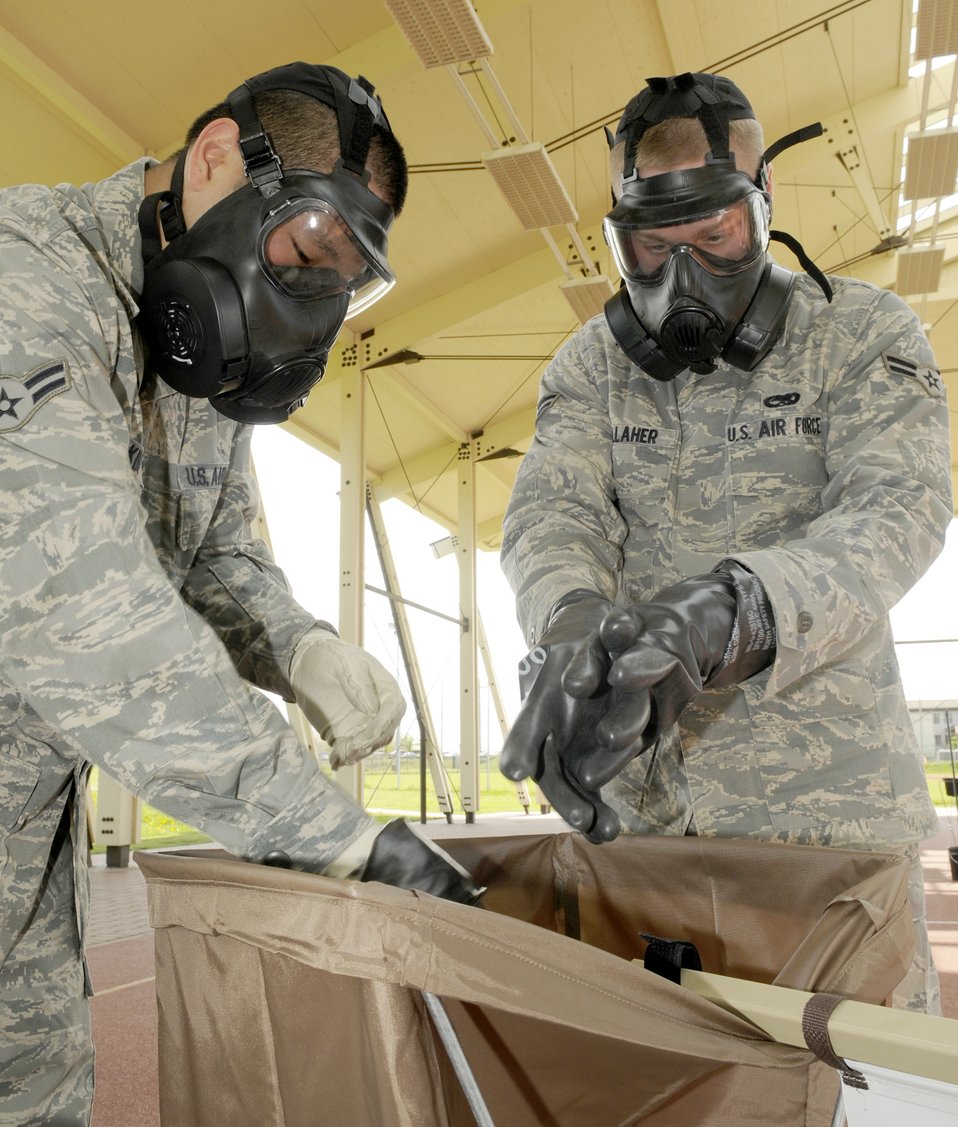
Airmen practice contamination control

Airman 1st Class Raymond Kim (left) and Airman 1st Class Chris Gallaher remove their gloves at a contamination control area May 20, 2010, at Spangdahlem Air Base, Germany. Airmen Kim is with the 52nd Component Maintenance Squadron and Airman Gallaher is with the 52nd Equipment Maintenance Squadron.